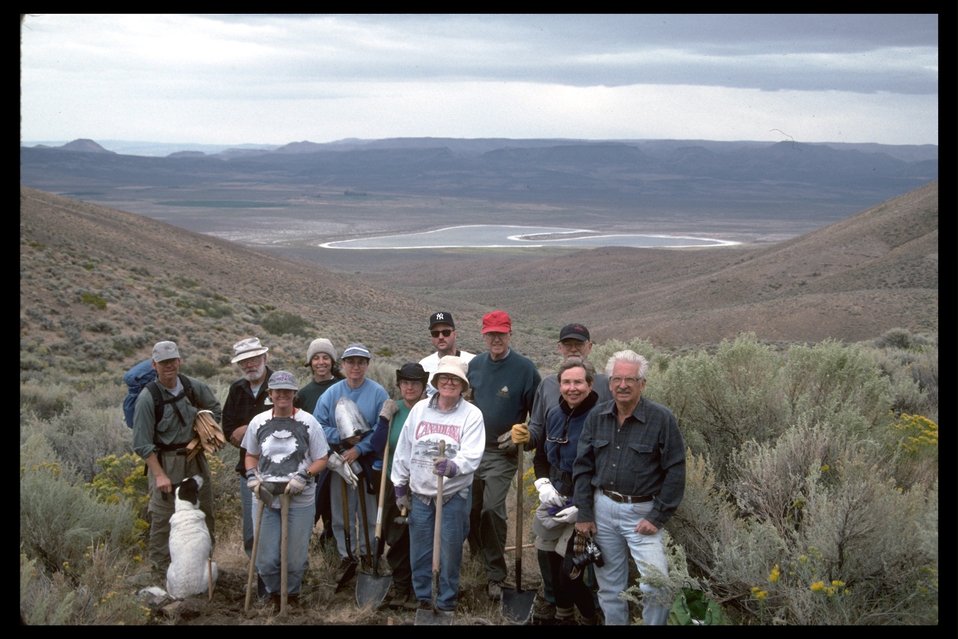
Pueblo Mountain WSA, a group photo of Sierra Club volunteers placing wooden water bars on a closed route. (WSA 2-81)